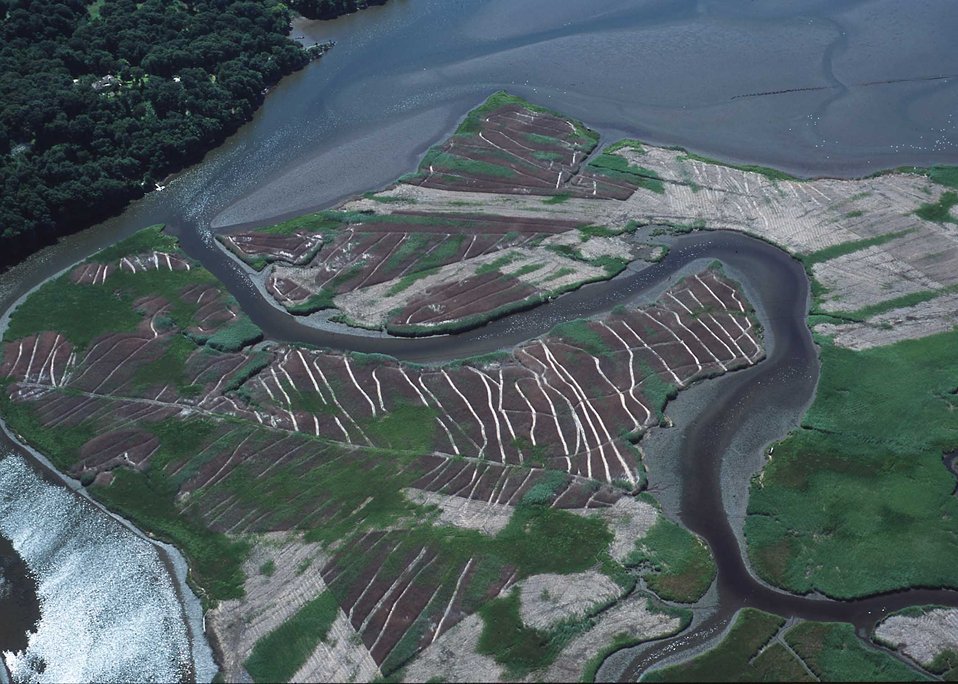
Connecticut River tideland habitat undergoing invasive plant control (light colored areas) and native plant community restoration.